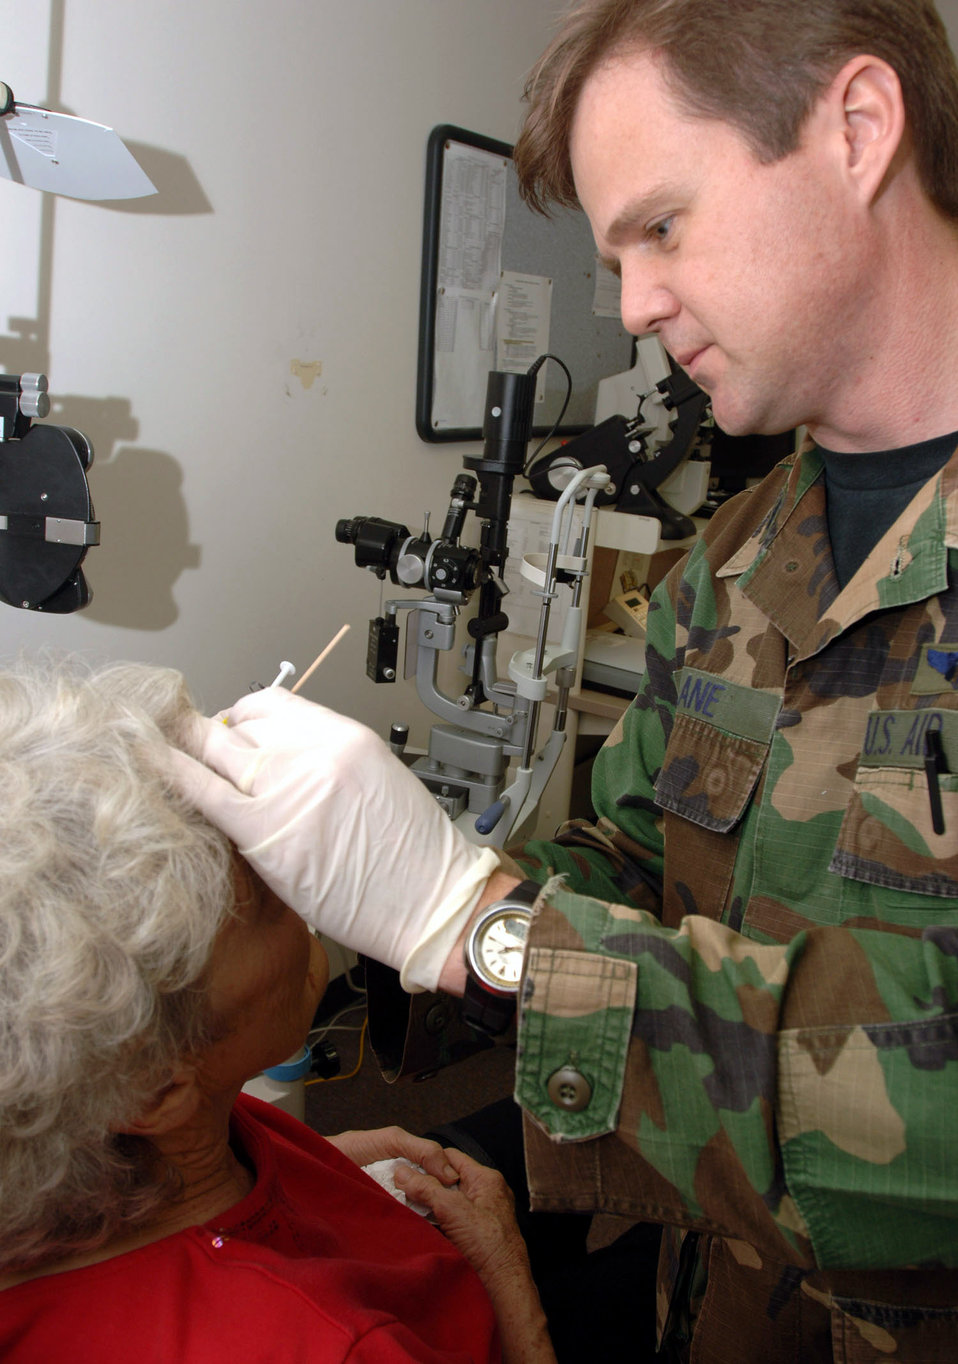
New eye treatment offers better outcome, saves money

Lt. Col. Richard Lane administers a shot of medication in Betty Disler's eye Dec 11in the Ophthalmology Clinic at Wilford Hall Medical Center, Lackland Air Force Base, Texas. The medication is a drug that prevents macular degeneration, a disorder that affects central vision. Colonel Lane is the director of Retina Service in the 59th Surgical Specialty Squadron.